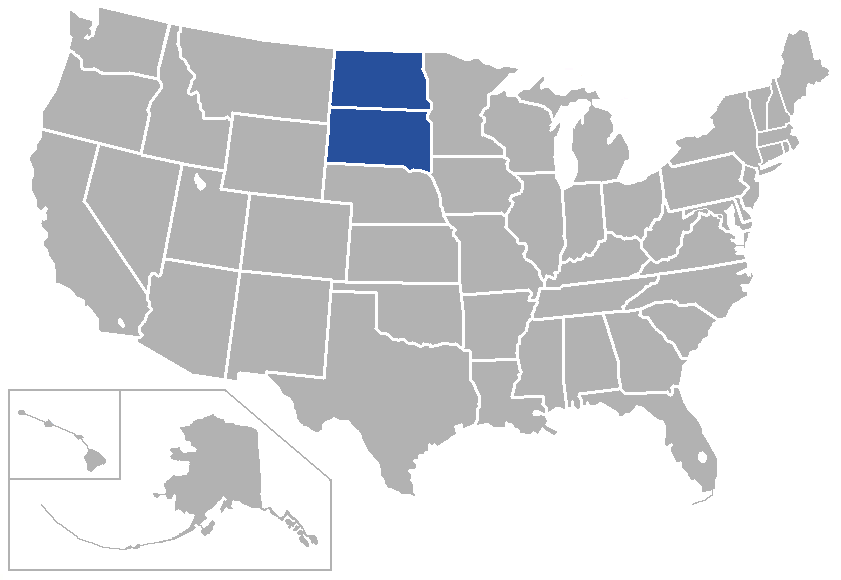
derived from en::Image:BlankMap-USA-states.PNG; map of states with en:Dakota Athletic Conference schools